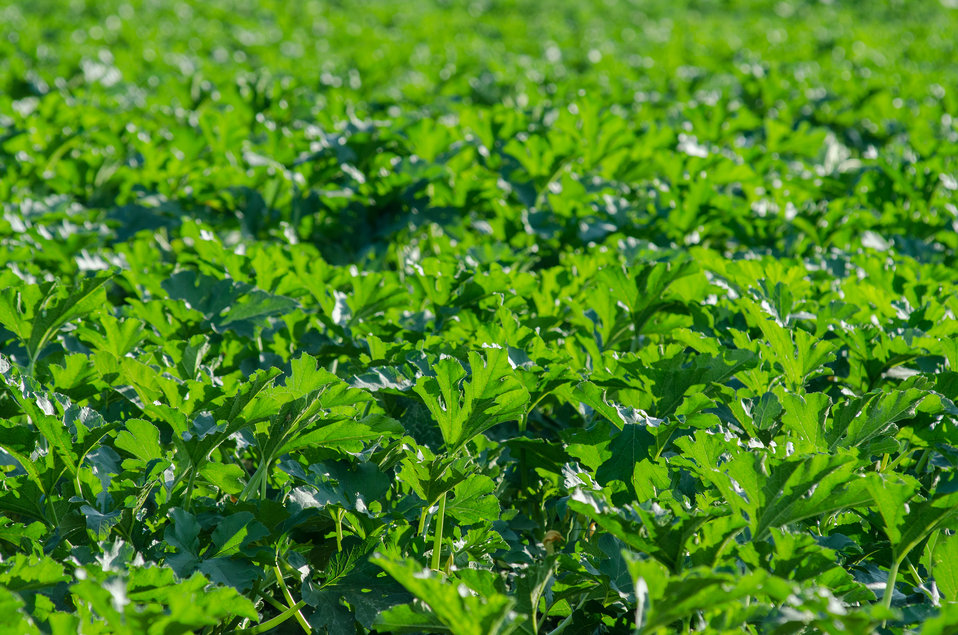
Fields of green zucchini squash, at Kirby Farms in Mechanicsville, VA on Friday, Sept. 20, 2013. Kirby Farms devotes 200 acres of the farm to eggplant, spinach, beets, tomato, jalapeno peppers, melons and a variety of greens. Soybeans and small grain are grown on the remaining 300 acres. The fertile Virginia soil and their management practices, allows Kirby Farms to double and triple crop fields with rotational crop selection. Wholesalers, who buy from this farm, sell the produce to major supermarkets in the Mid-Atlantic region, from North Carolina to Maryland. Restaurateurs in the local area prepare and serve their harvest to patrons in the Greater Richmond Region.